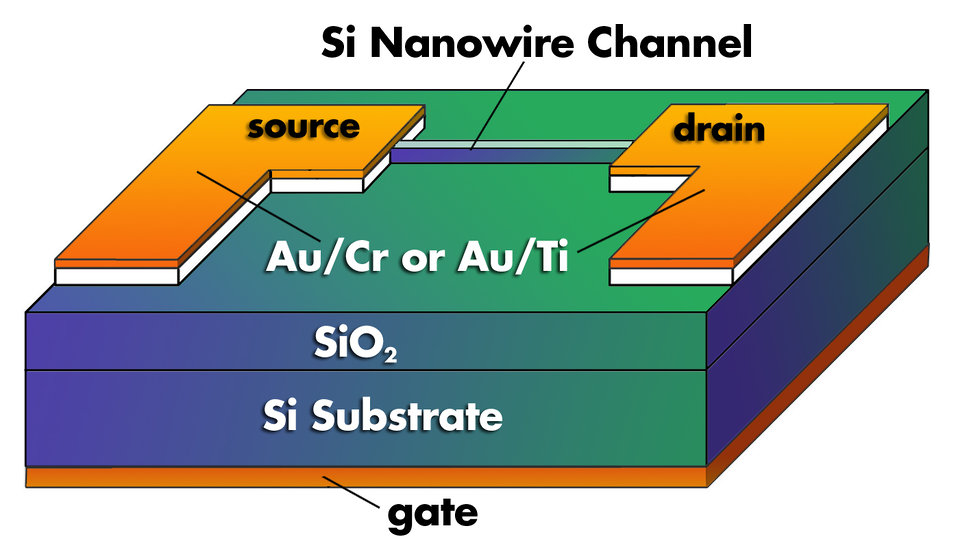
Nanowire Transistor

A schematic diagram of the NIST nanowire transistor.